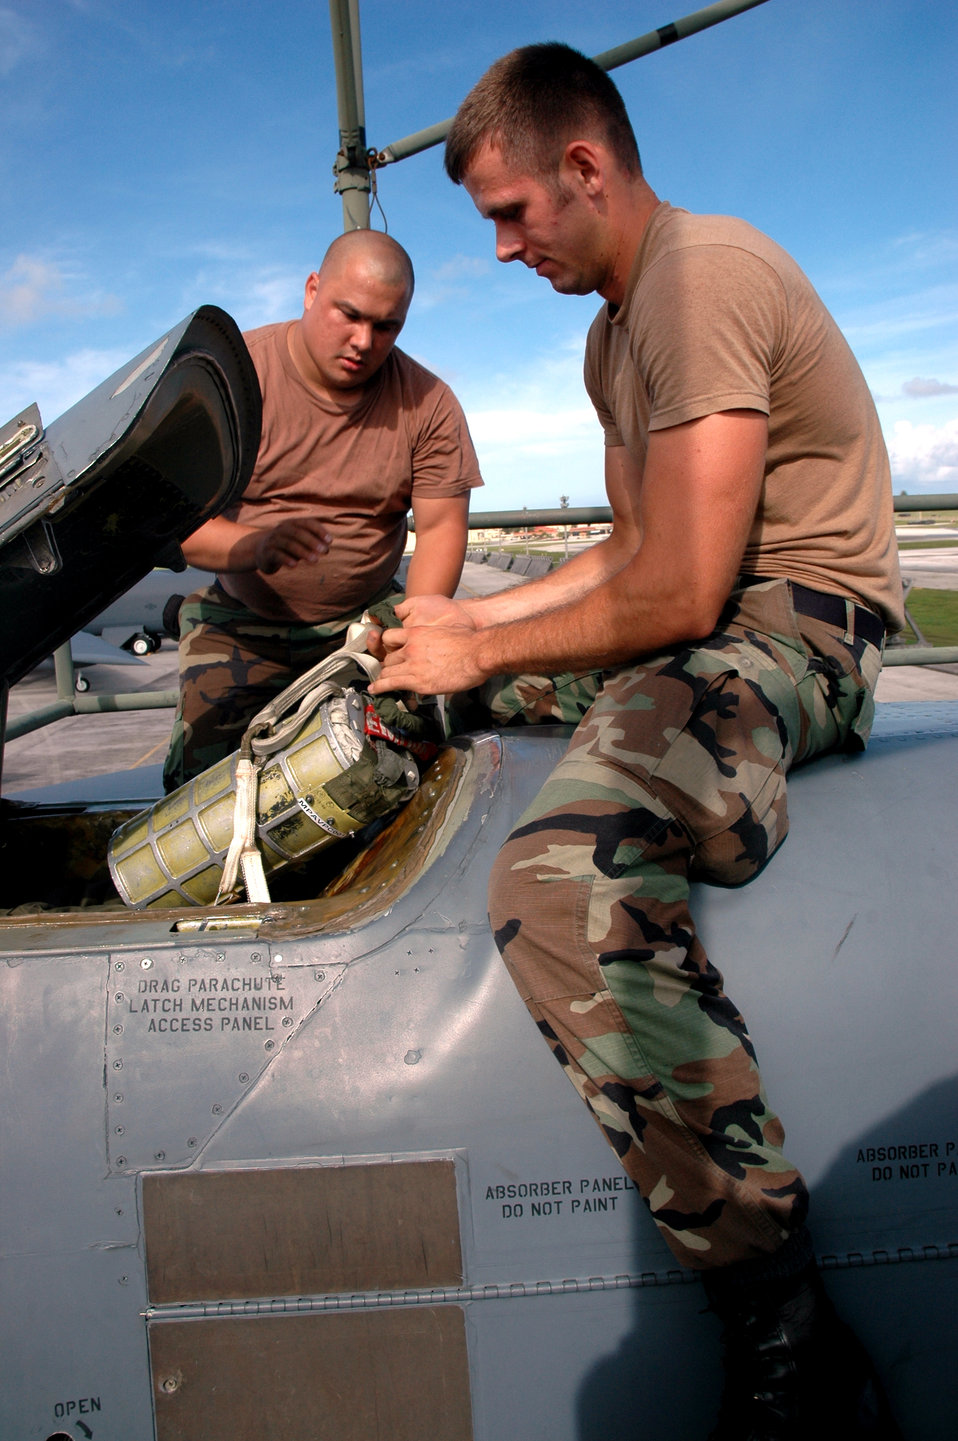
Deployed B-52 maintainers achieve perfect record

Staff Sgt. Kevin Arrington (left) and Senior Airman Tyson Reams install a drag chute canister on a B-52 Stratofortress Sept. 21 during aircraft recovery at Andersen Air Force Base, Guam. Both are crew chiefs with the 36th Expeditionary Aircraft Maintenance Squadron. The squadron has achieved 100 percent mission effectiveness and 100 percent weapons release rates since arriving in September. The Airmen are deployed to Andersen AFB as part of the United States' commitment to keeping a continuous bomber presence in the Pacific region.